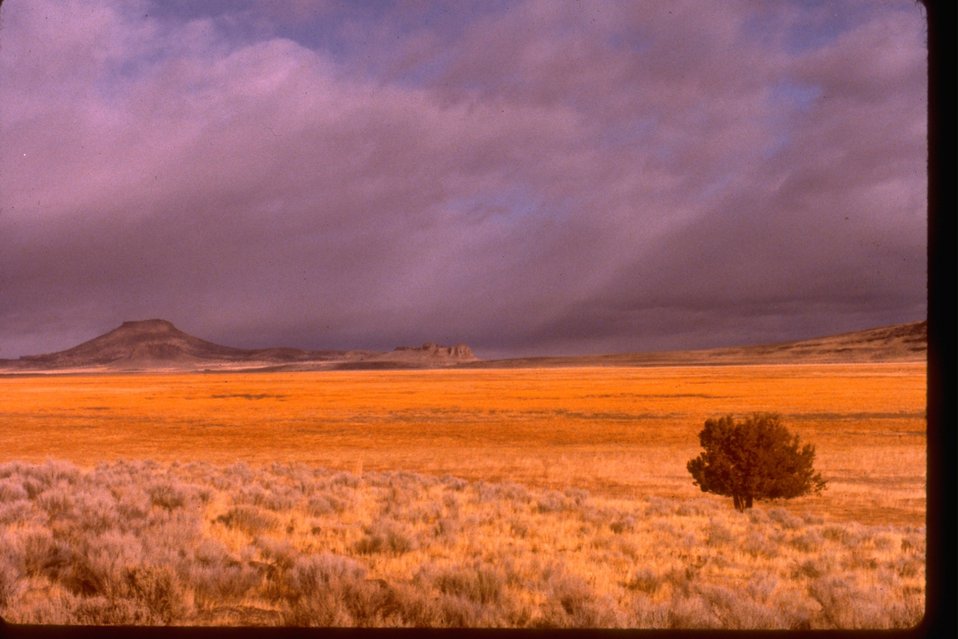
Table Rock.